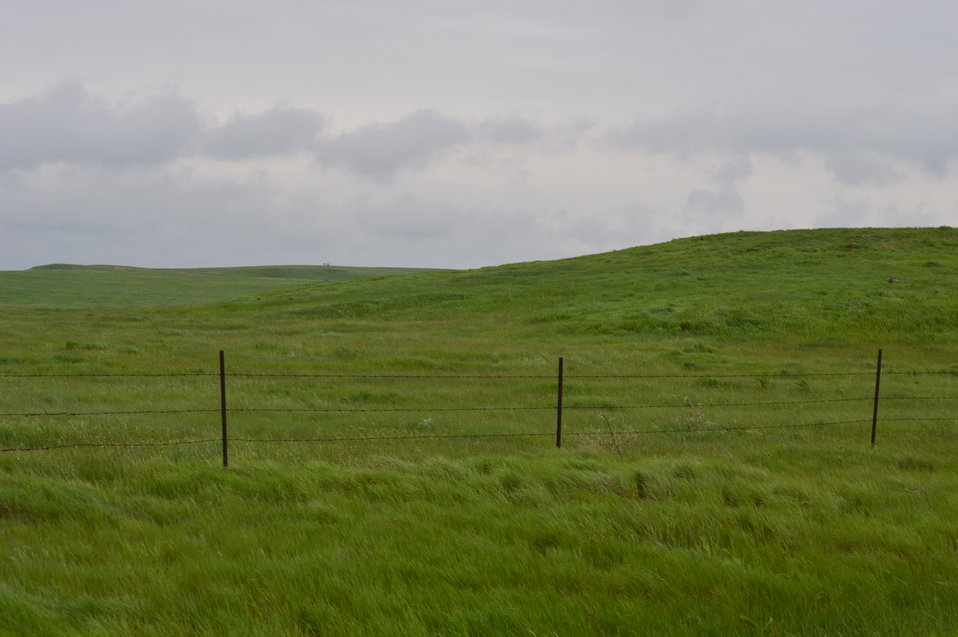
Prairie Landscape

Scenery and wildlife at Lake Ilo National Wildlife Refuge in North Dakota.